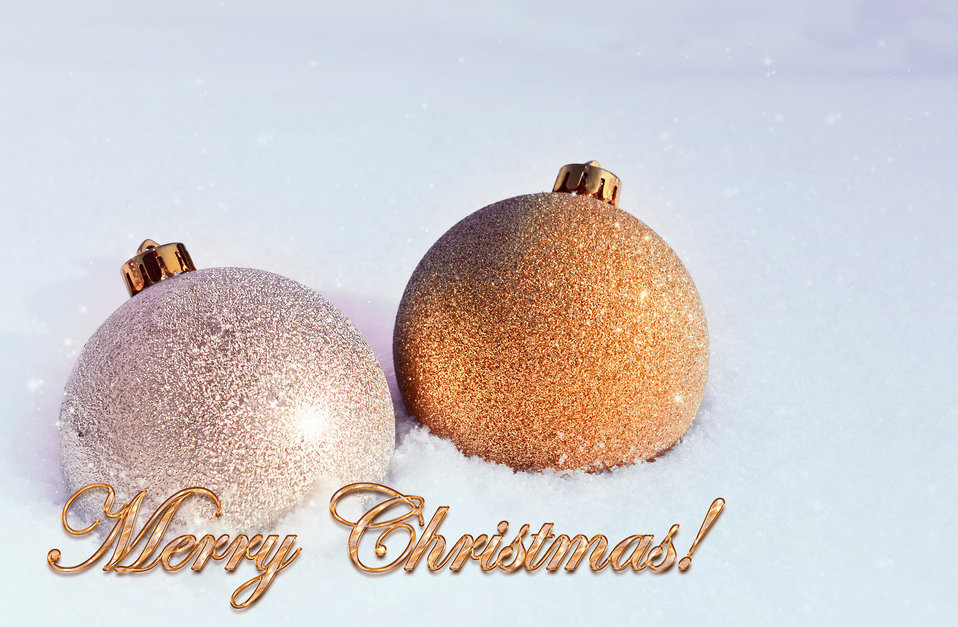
Merry christmas!

Card with christmas. christmas decorations in the snow..